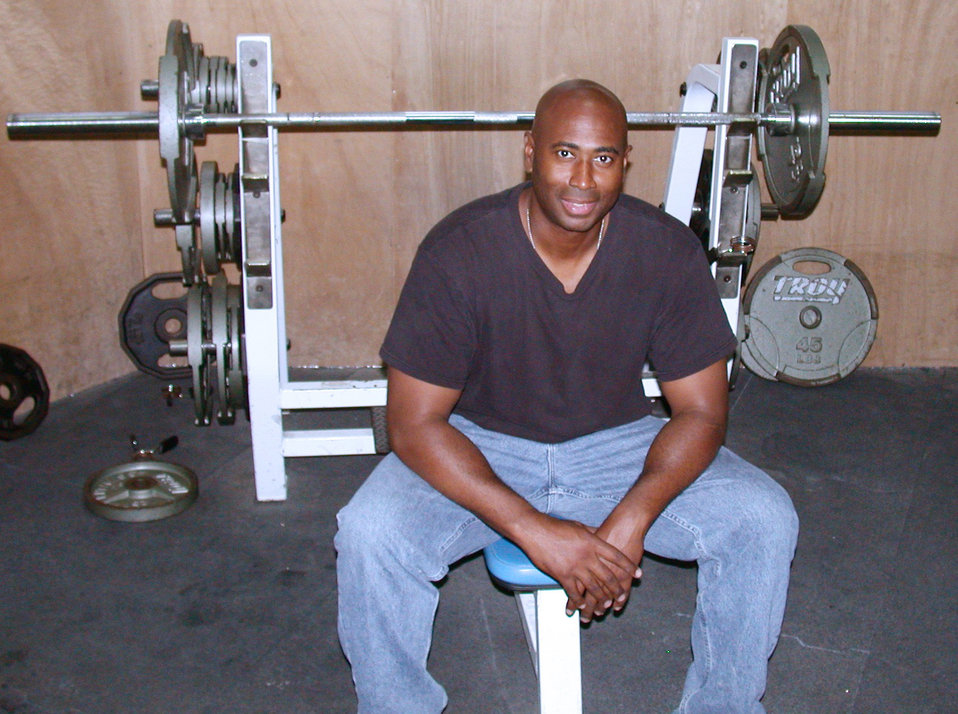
Desert lifestyle results in big wight loss

SOUTHWEST ASIA -- Staff Sgt. Reginald Johnson lost 33 pounds while helping fellow deployed Airmen shed unwanted pounds. He is the fitness center manager with the 380th Expeditionary Services Squadron at a forward-deployed location.